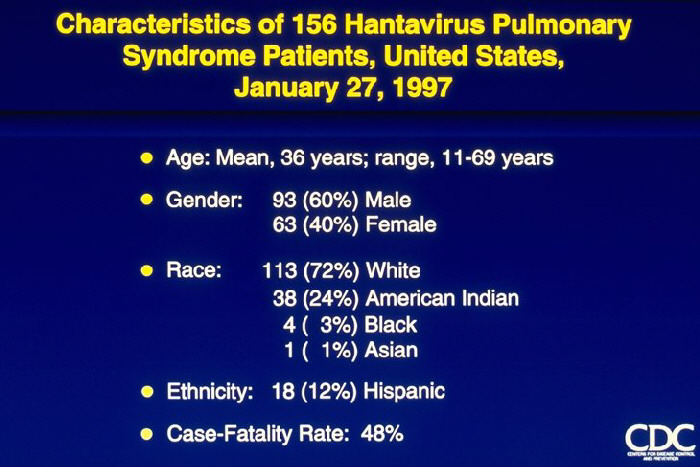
Reported Characteristic of 156 Hantavirus Pulmonary Syndrome Patients, United States, January 27, 1997.